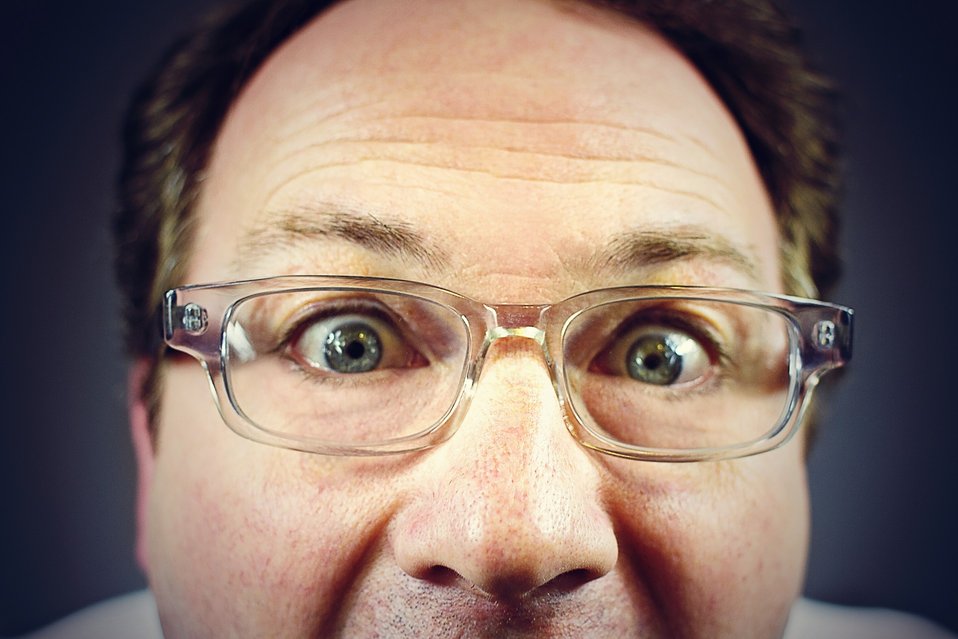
Crazy creepy man

Close up of a peeping tom.